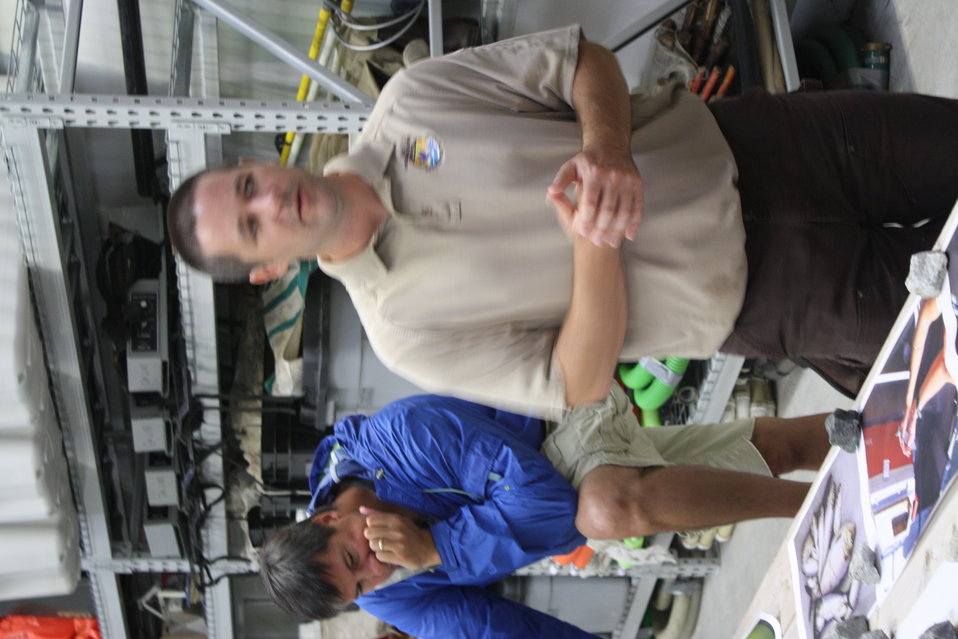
Nashua National Fish Hatchery welcomes regional office employees

Viewing the Hatchery.